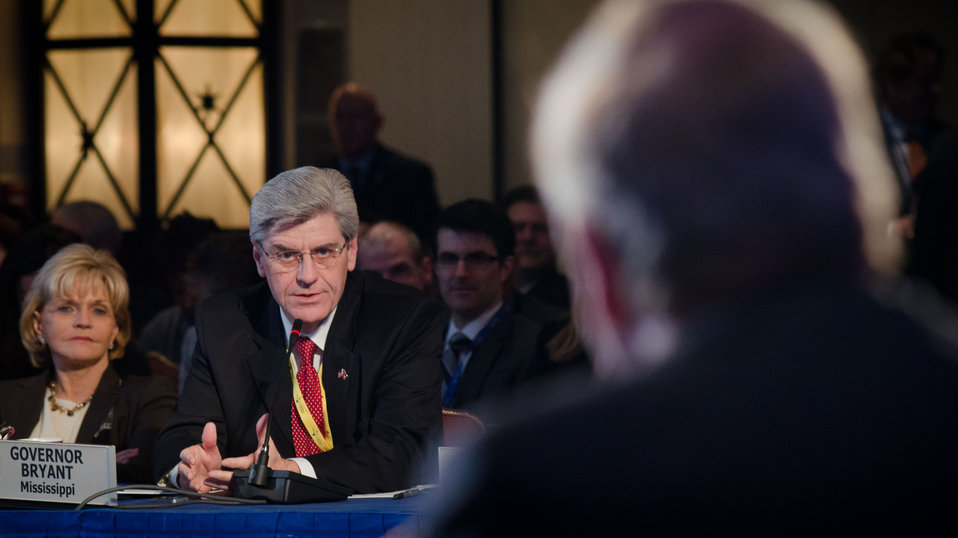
Mississippi - Governor Phil Bryant poses a question to Agriculture Secretary Tom Vilsack who was the guest speaker at the National Governors Association Education, Early Childhood and Workforce Committee meeting in Washington, D.C., on Sunday, February 26, 2012.